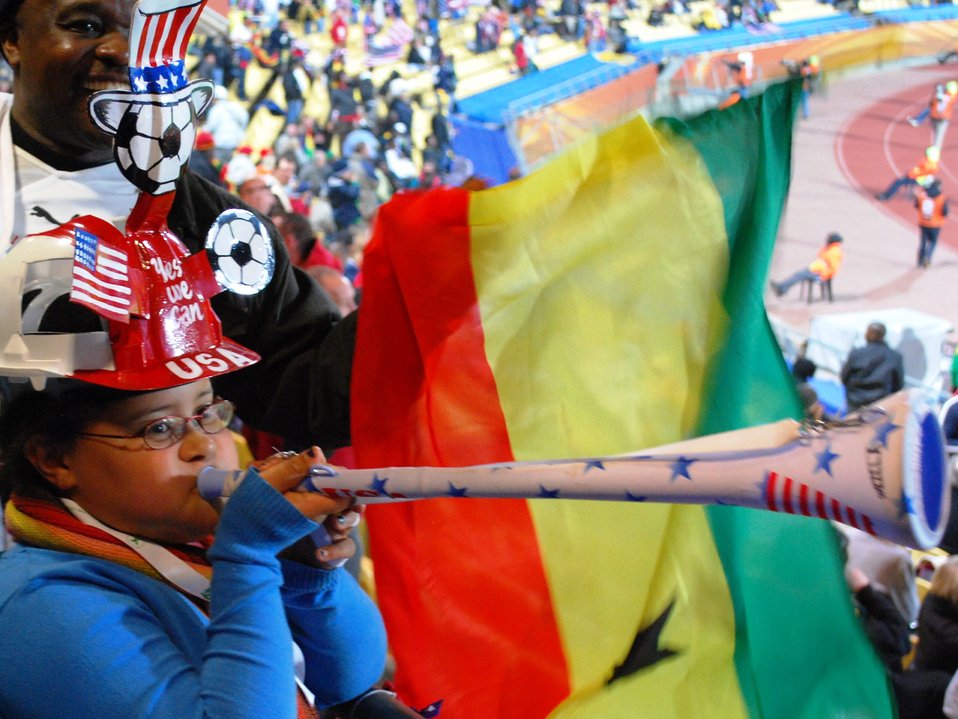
A Ghanaian Fan Blasts the Vuvuzela

A Ghanaian fan blasts her vuvuzela during the FIFA 2010 World Cup soccer match between the United States and Ghana on June 26, 2010, at the Royal Bafokeng stadium in Rustenburg, South Africa.